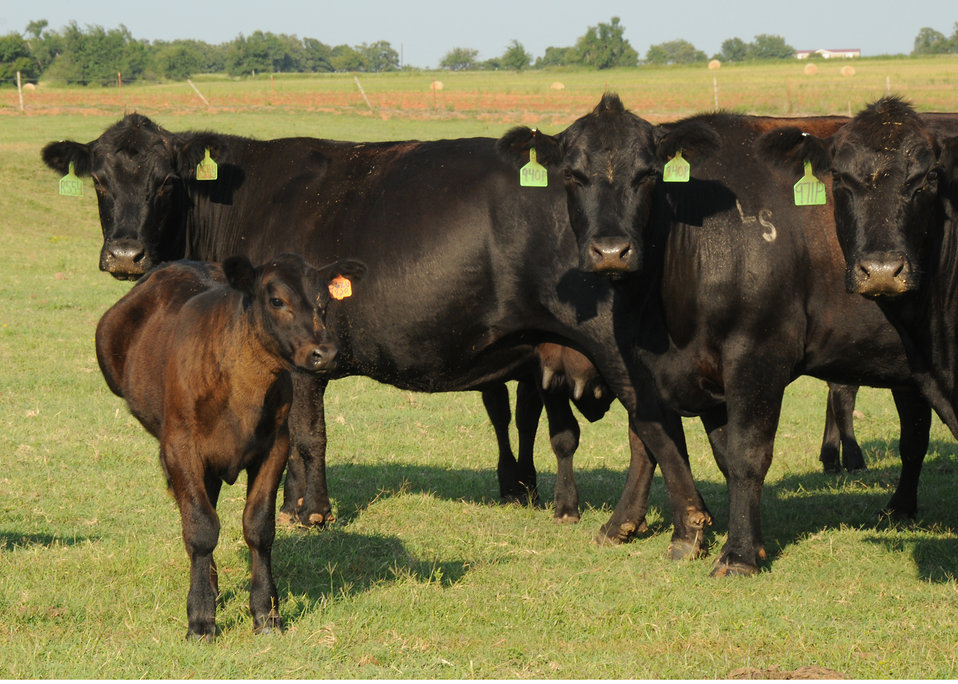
Black Angus cows on the Burris farm in McLoud, OK.